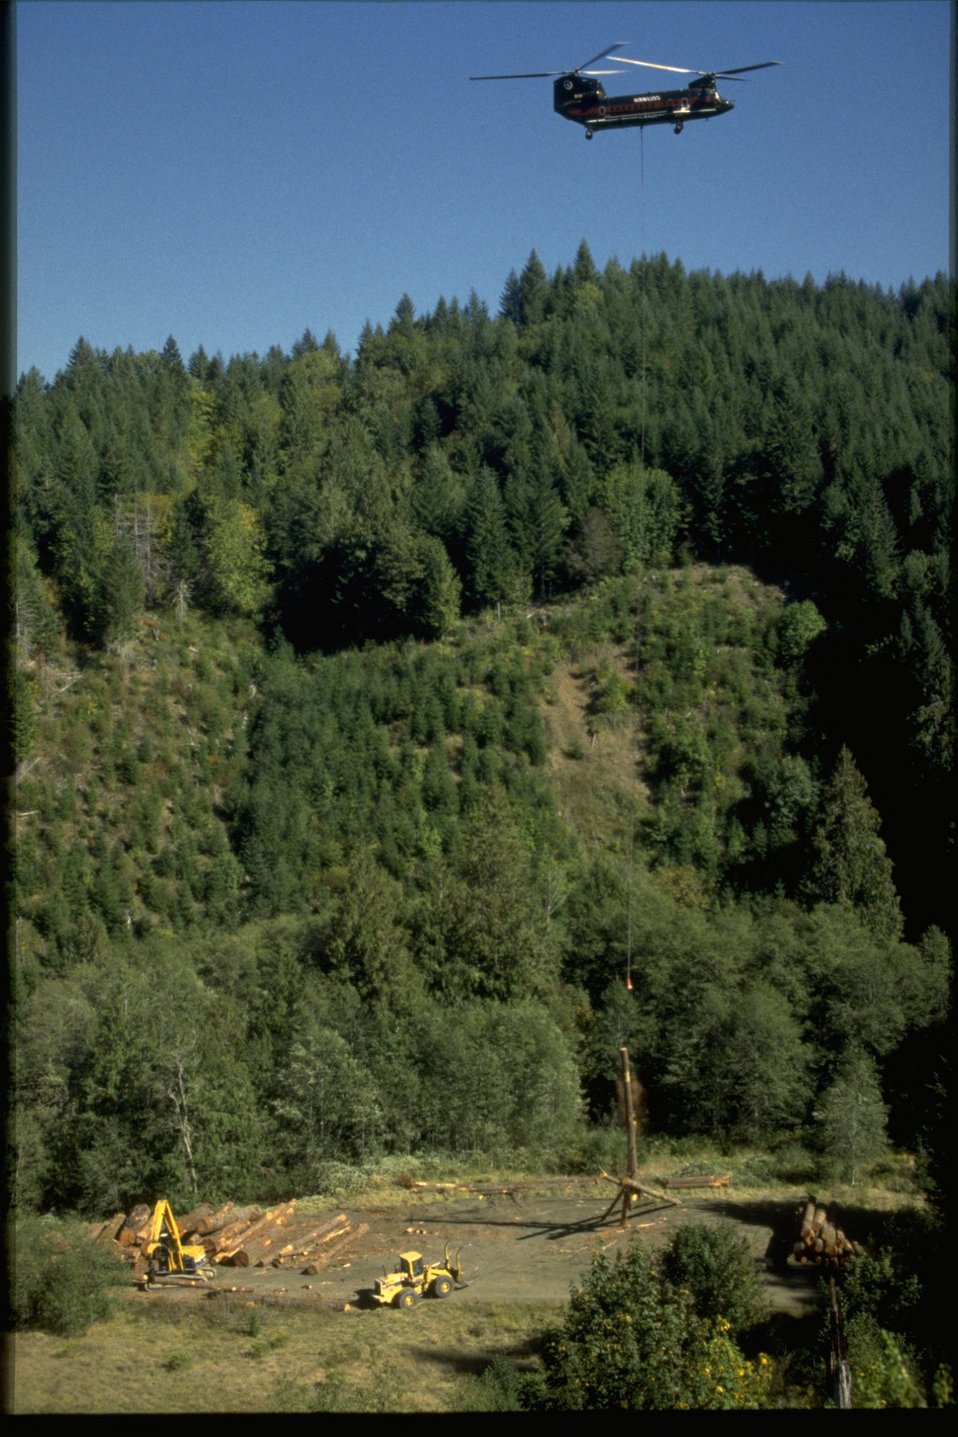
Helicopter logging at the BLM's Tobe West salvage rider sale.